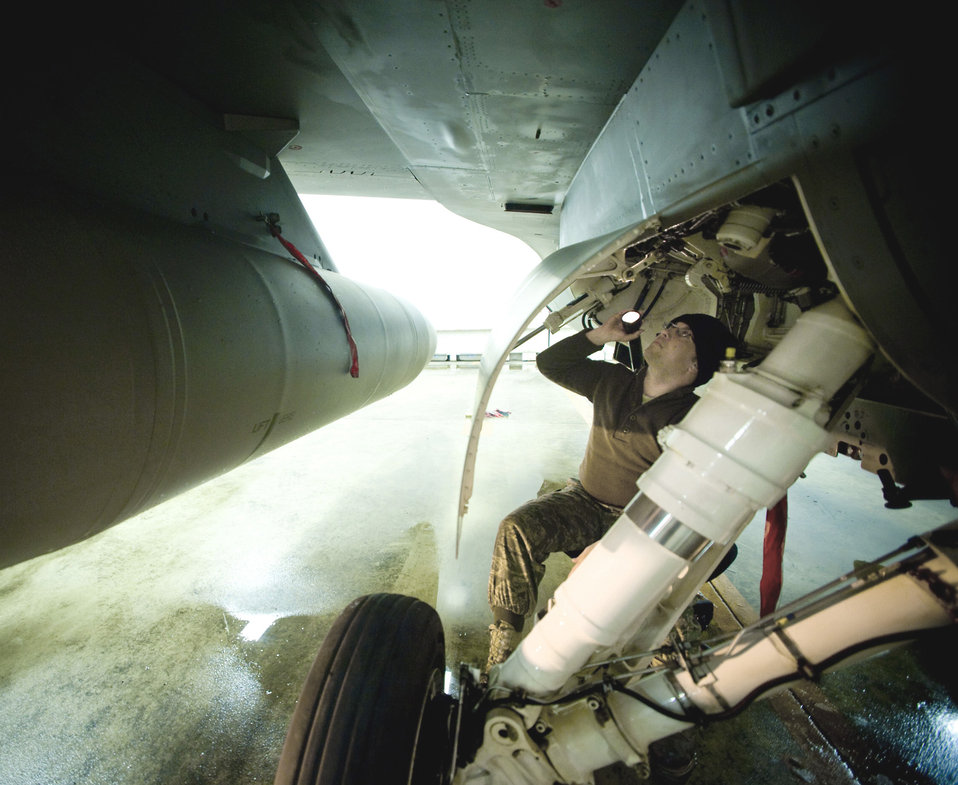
National Guard Airmen augment Misawa maintenance

Staff Sgt. Brad Millhouse performs a quality assurance inspection on the landing gear of an F-16 Fighting Falcon March 6 at Misawa Air Base, Japan. Sergeant Millhouse, an Air National Guardsman F-16 crew chief deployed from the 122nd Fighter Wing from Fort Wayne, Ind., had to make sure the landing gear was re-lubricated properly after washing off sand from the jet's recent deployment to Iraq.